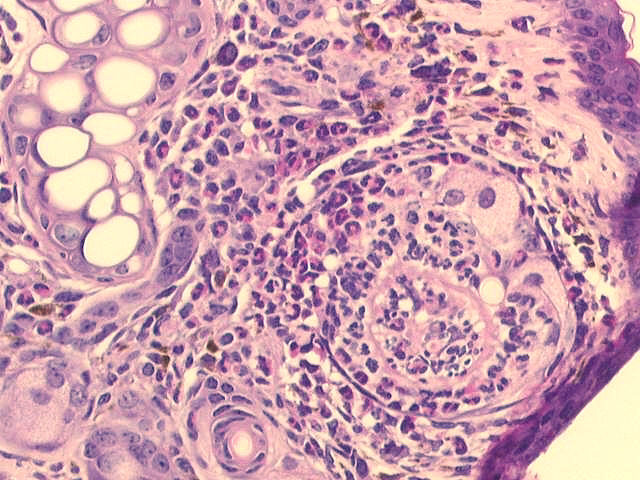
Schistosomulum in ear skin hair follicle of a vaccinated mouse.